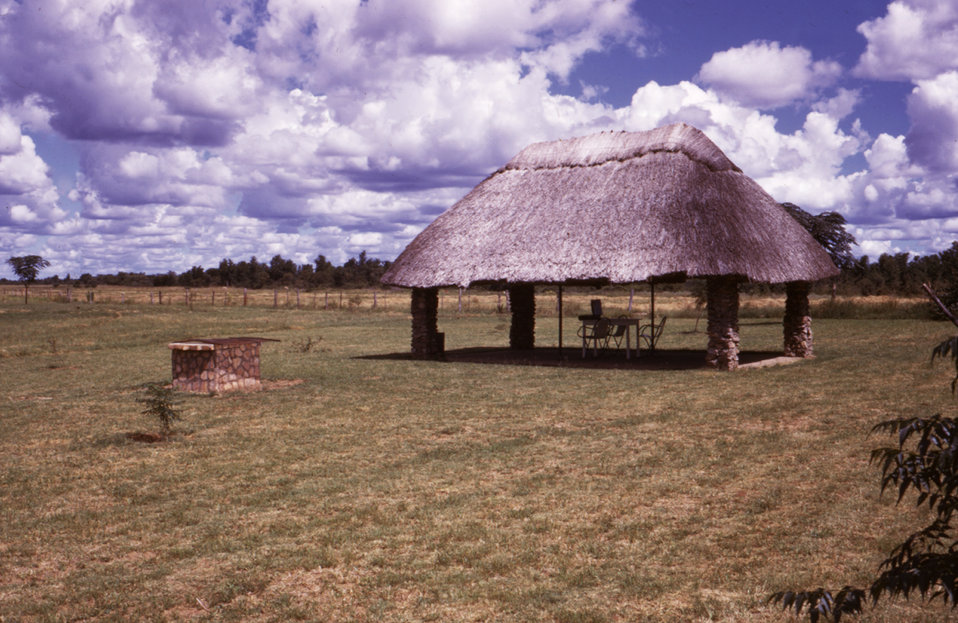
This Gwaai, Zimbabwean Campground, where two travelers stayed in 1975, was the site of a Marburg investigation after the same travelers were hospitalized with the Marburg virus disease.